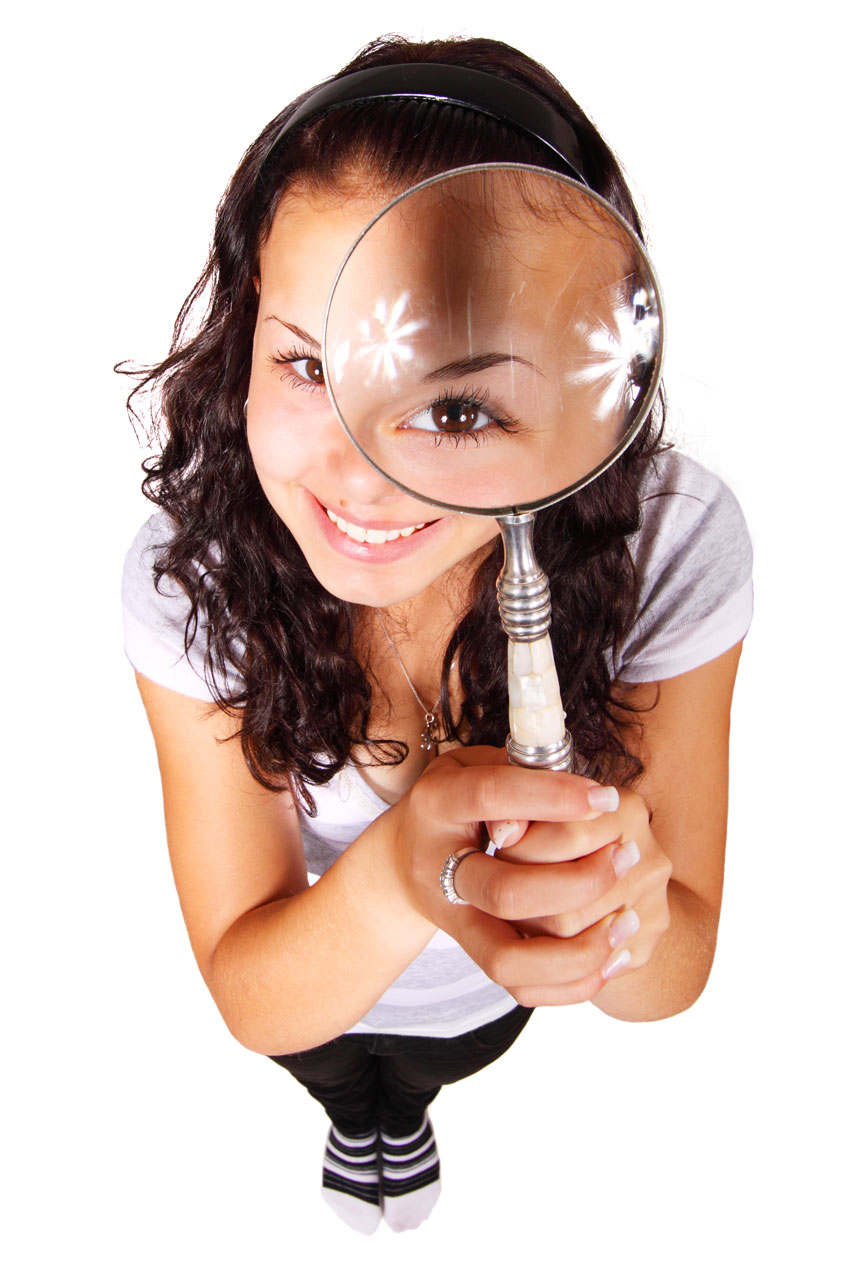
Woman with magnifying glass

Young woman with magnifying glass.